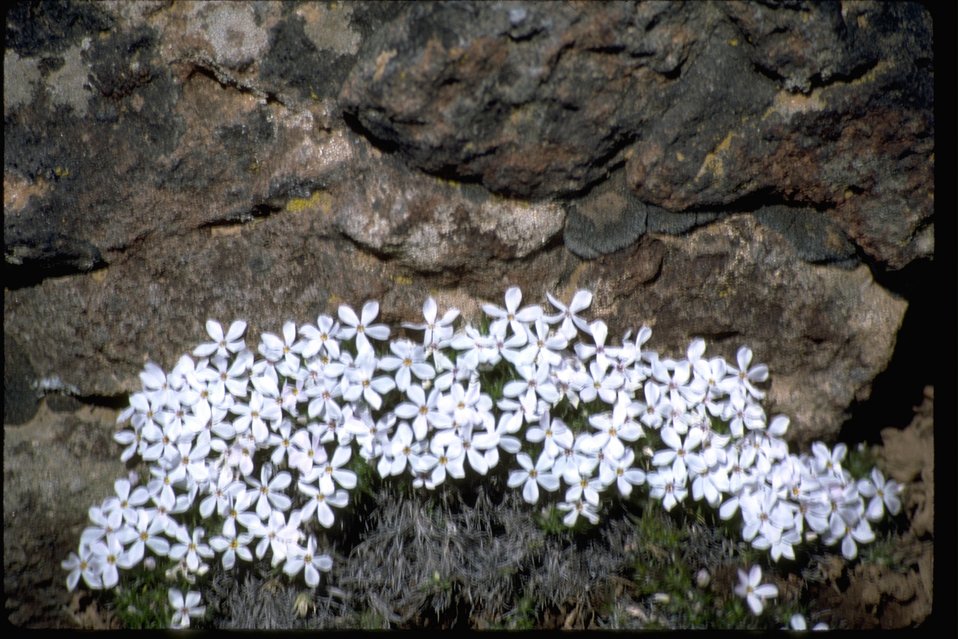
Phlox wildflowers found in the Fish Creek Rim Wilderness Study Area. OR 1-117.